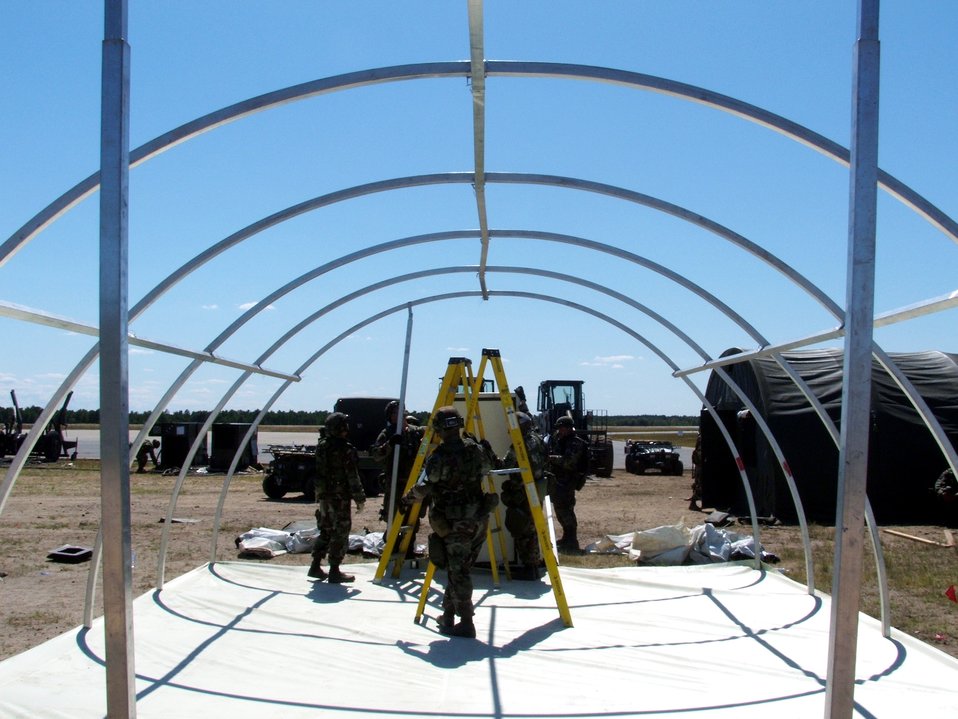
Deployment skills

Airmen with the 572nd Contingency Response Group at Travis Air Force Base, Calif., build a tent during an Eagle Flag 06-4 scenario at Naval Air Engineering Station Lakehurst, N.J., on Aug. 12. The events, controlled by the Air Mobility Warfare Center's 421st Combat Training Squadron, test Airmen on their expeditionary combat support skills in preparation for deployments.